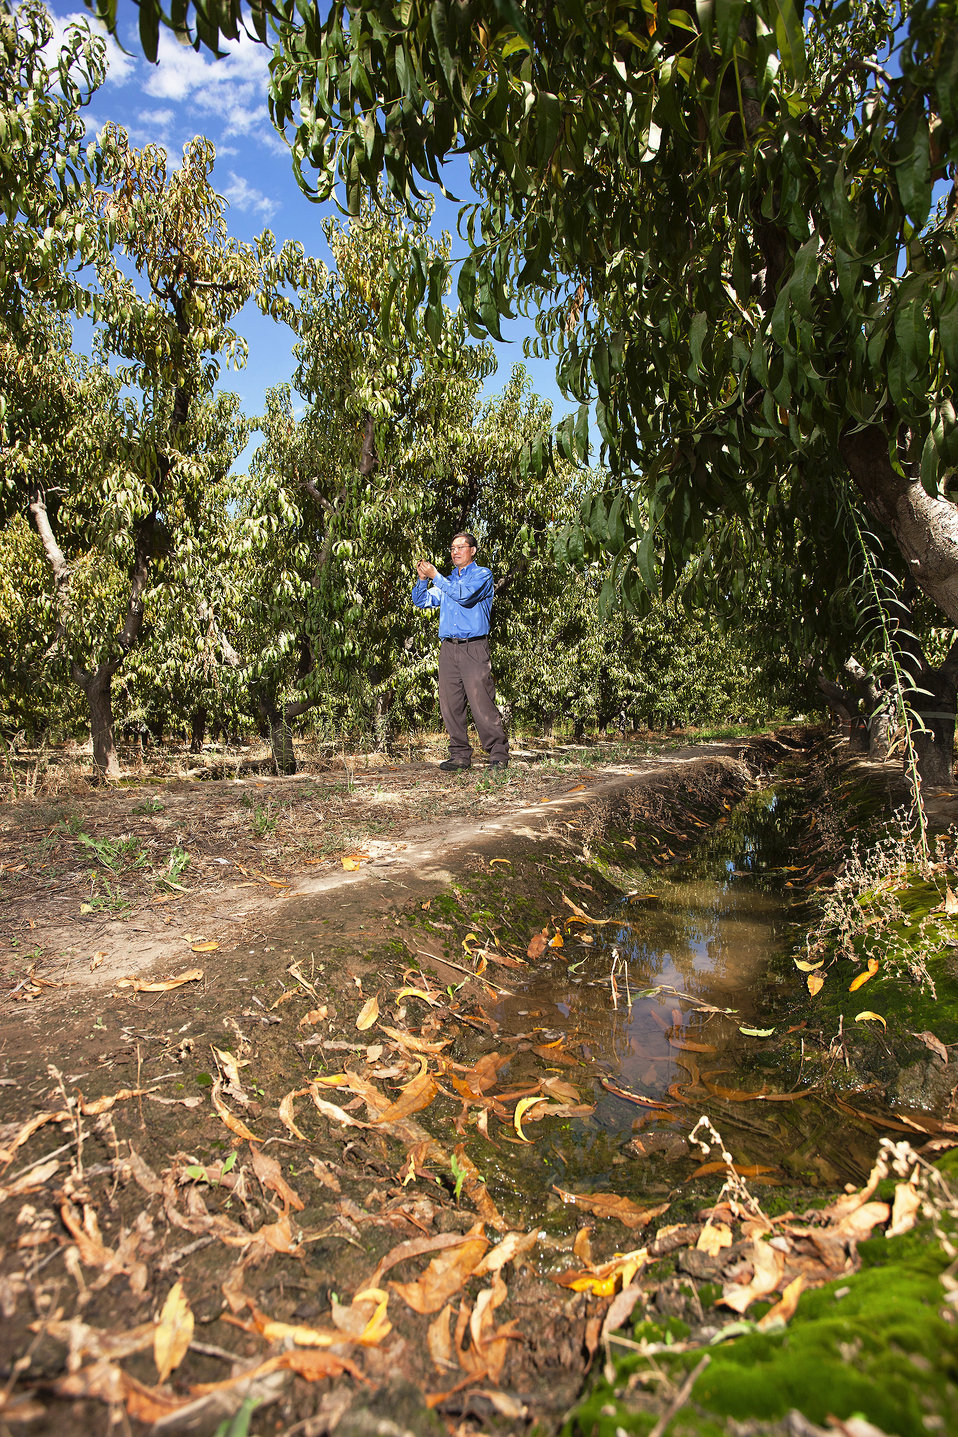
U.S. Department of Agriculture (USDA) Agriculture Research Service (ARS) soil scientist Dong Wang examines the leaves of peach trees that underwent postharvest deficit irrigation, in the San Joaquin Valley, CA on Jan. 3, 2004.